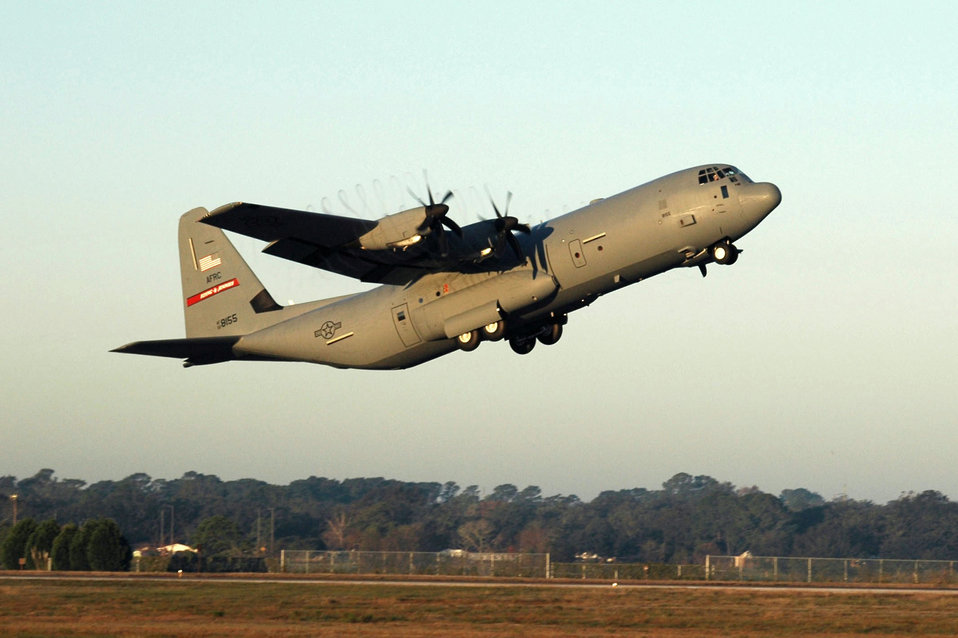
Cleared for takeoff

KEESLER AIR FORCE BASE, Miss. -- Flying the new C-130J Hercules, Airmen from the 815th Airlift Squadron here deployed in December to support operations Iraqi Freedom and Enduring Freedom in Southwest Asia. The mission marked the first Air Force's combat deployment of the C-130J.